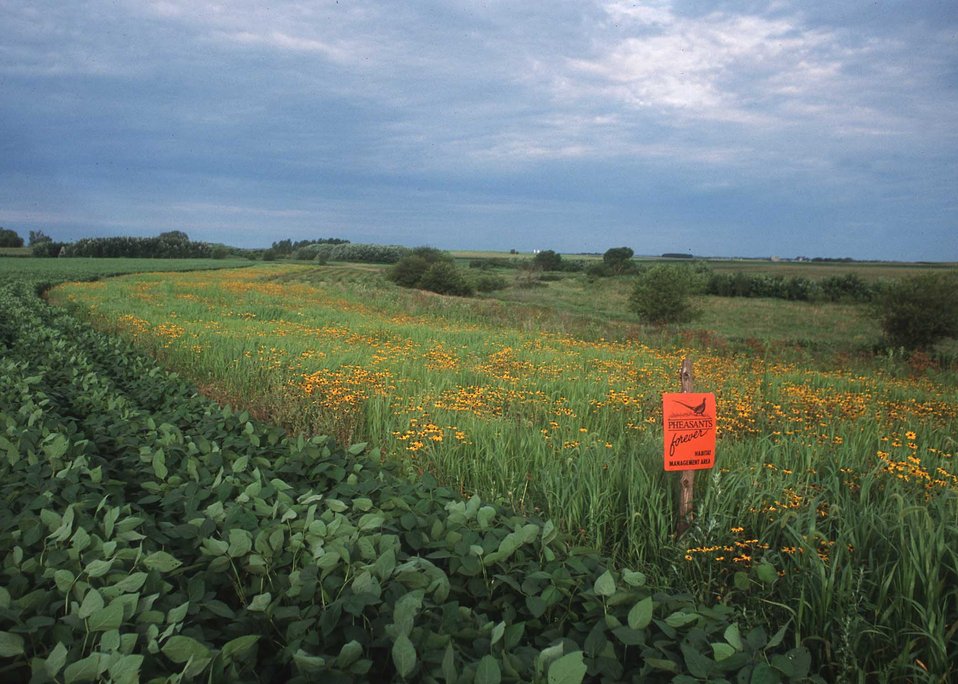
Native grasses and forbs are part of the planting mixture in a conservation buffer along Bear Creek in central Iowa.